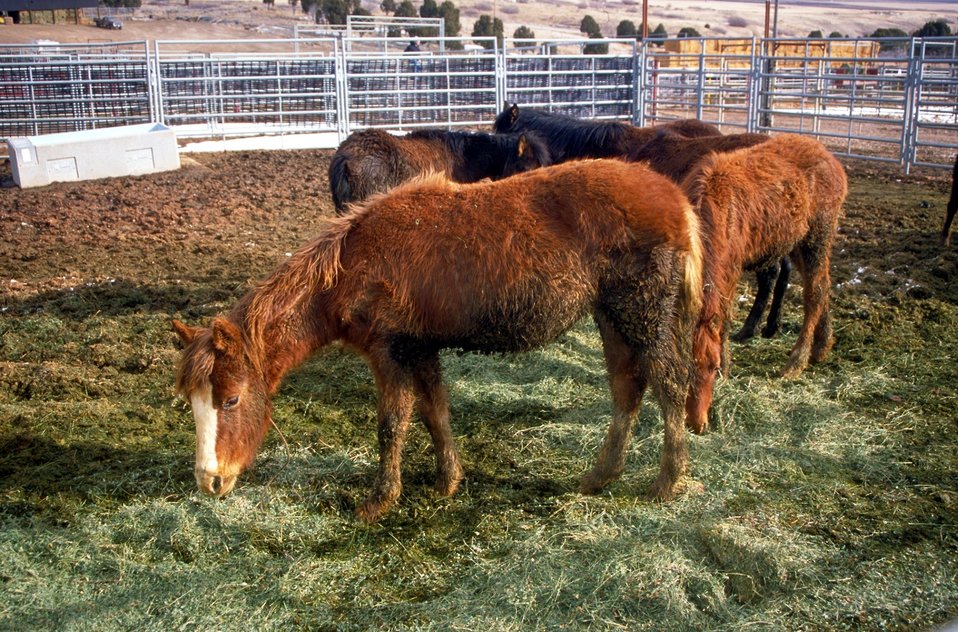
Salt Lake Regional Wild Horse and Burro Center Butterfield Canyon.